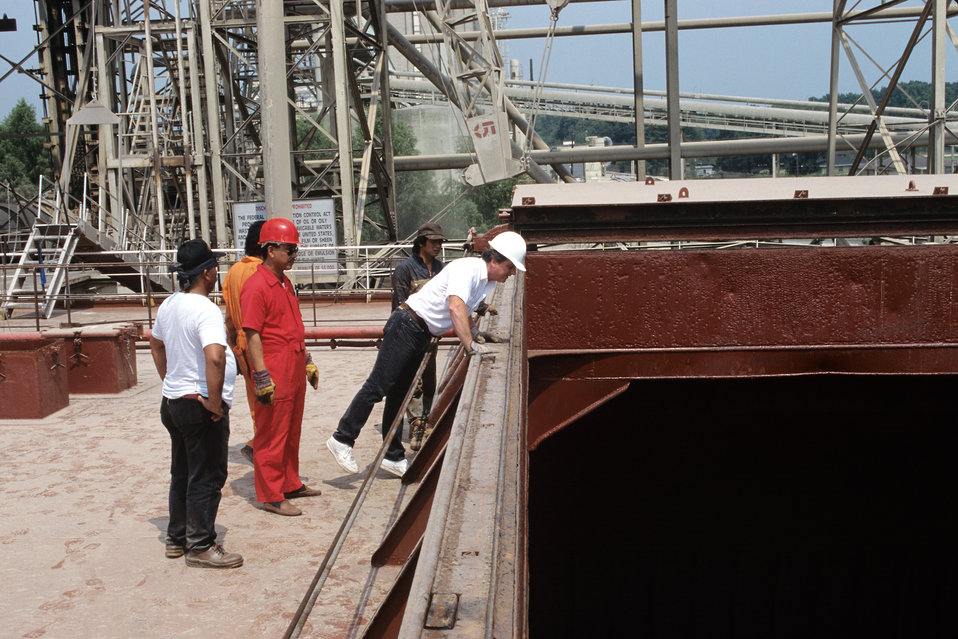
A U.S. Department of Agriculture (USDA) Grain Inspection, Packers and Stockyards Administration (GIPSA) Federal Grain Inspection and Weighing Services (FGIS) agent performs an examination of a ship’s hold prior to loading at the Bunge Grain Facility in Destrehan, LA on Sept. 1, 1996. Ship’s holds are routinely examined prior to loading before being cleared to receive rice at dockside. USDA GIPSA offers inspection services for rice upon request on a fee basis for both domestic and export shipments. Rice inspection services are divided into two basic types: inspection for grade or factor analysis without grade. Inspection for grade involves analyzing the sample according to the quality factors listed in the Official U.S. Standards for Rice and certifying the applicable numeric grade designation, the quality factors responsible for the grade assignment, and any other quality factors the customer requests. Factor analysis involves the analysis of quality factors requested by the applicant for service without the certification of an applicable numeric grade designation. Factors requested by applicants might include free fatty acid, total oil and free fatty acid, stain as a count, broken in brown rice, false smut, and aflatoxin. Official inspections result in the issuance of an official certificate, which reports the grade of the rice. U.S. and international buyers rely on official USDA inspection certificates to provide accurate, official descriptions of the grade, class, and condition of the inspected rice. Official certificates are receivable by all offices and all courts of the United States as prima facie evidence of the truth of the statements stated thereon.